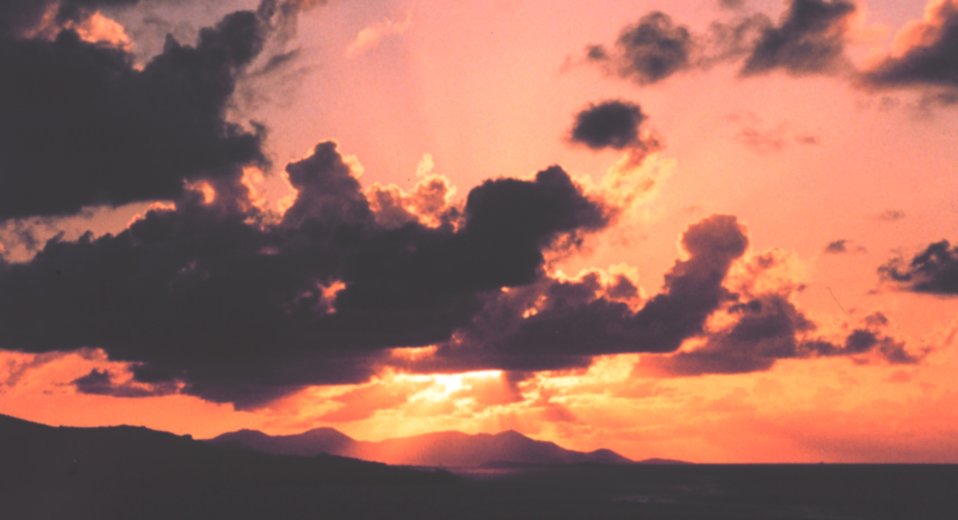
Sunset view from Chenay Bay on the northeast coast of St. Croix.